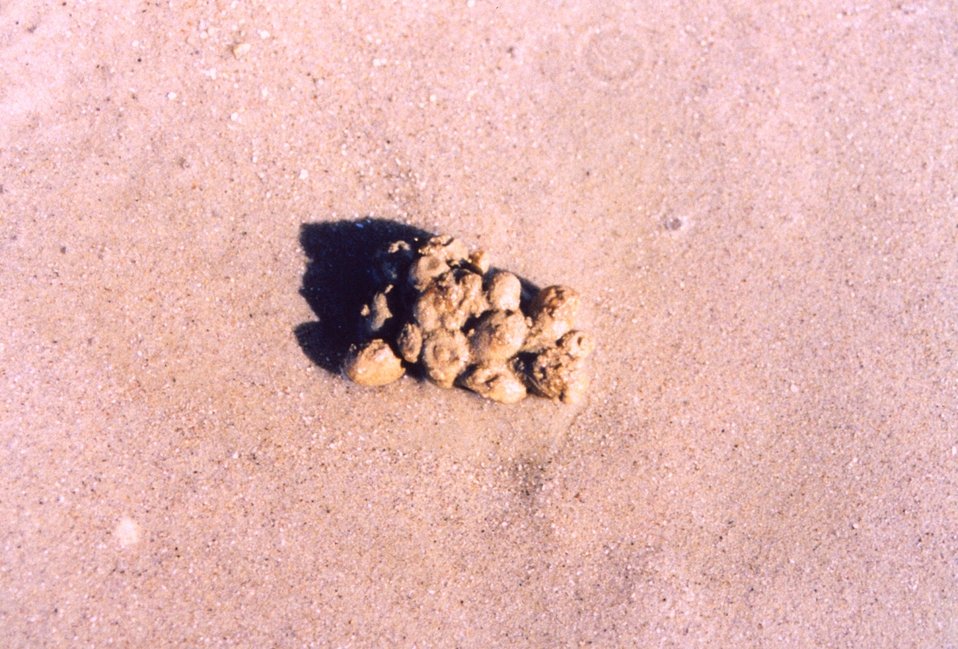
Sea squirts.